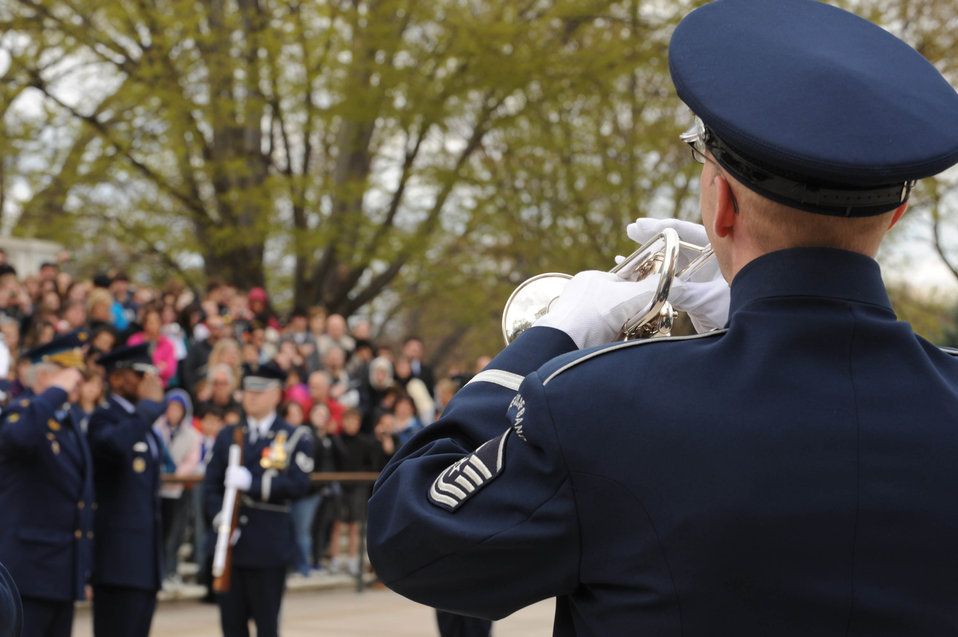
Wreath laying ceremony

Master Sgt. Michael Bosch, a member in the U.S. Air Force band, plays Taps during a wreath-laying ceremony at the Tomb of the Unknowns, April 5, 2011, at Arlington National Cemetery, Va. The guest honoree and wreath presenter was Gen. Col. Alexander Nikolyevich Zelin, commander-in-chief of the Russian air force. The wreath was laid in honor of all fallen service members.